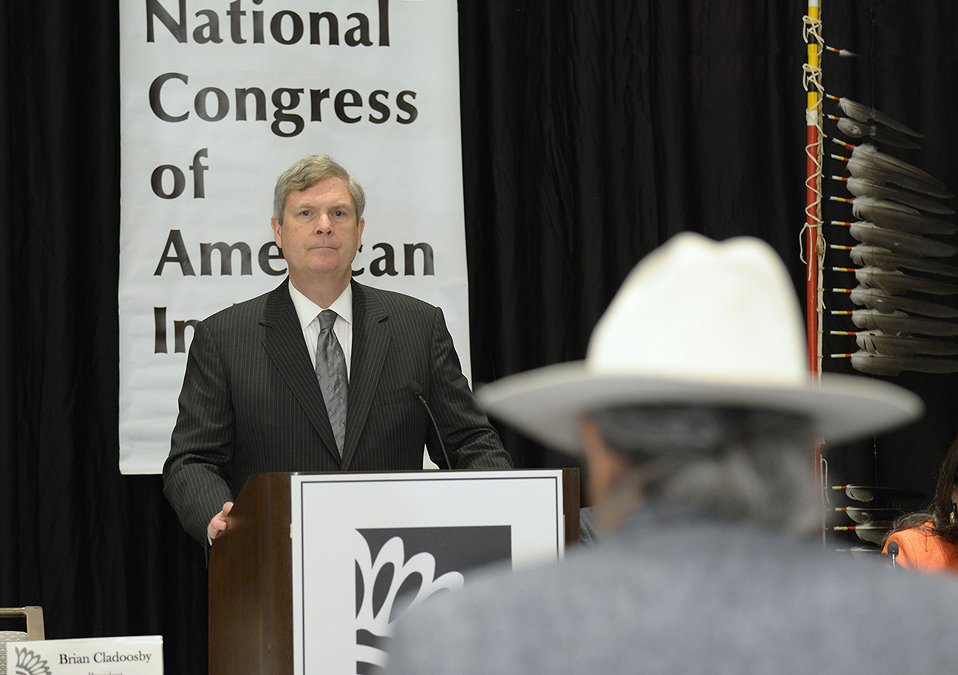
Agriculture Secretary Tom Vilsack takes questions at the 2014 National Congress of American Indians (NCAI) Executive Council Winter Session at the Westin Washington City Center in Washington, D.C. on Thursday, Mar. 13, 2014.